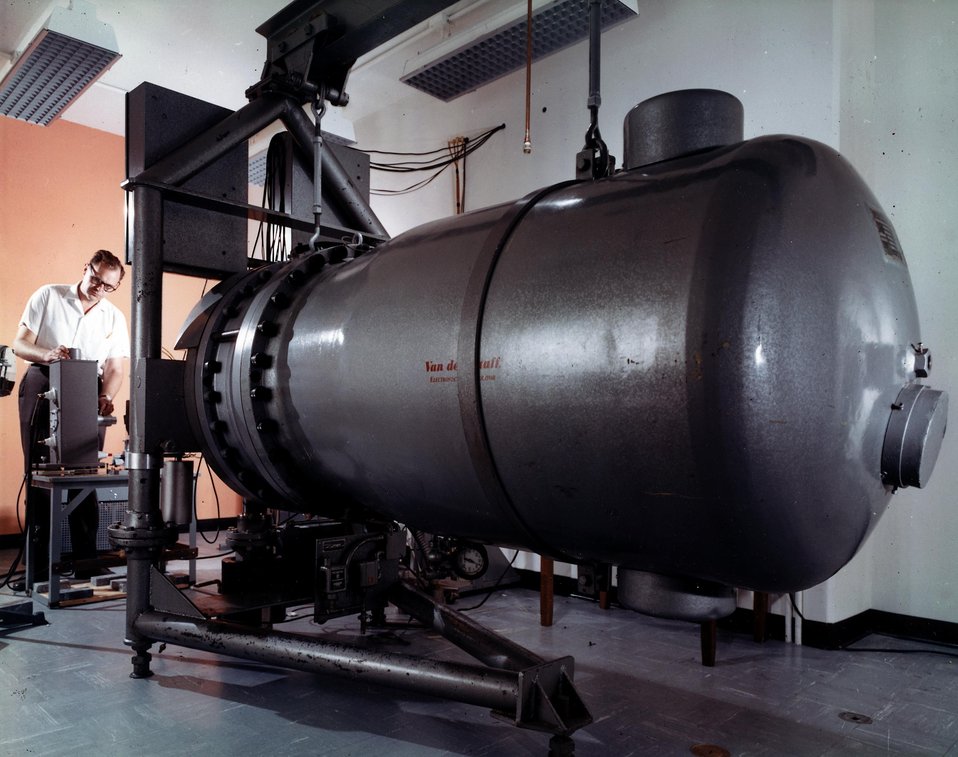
Van de Graaff electron accelerator. One of the mirrors of the optical equipment used to follow the light absorption of very short-lived chemical species produced by the electron beam is being adjusted. c. 1966